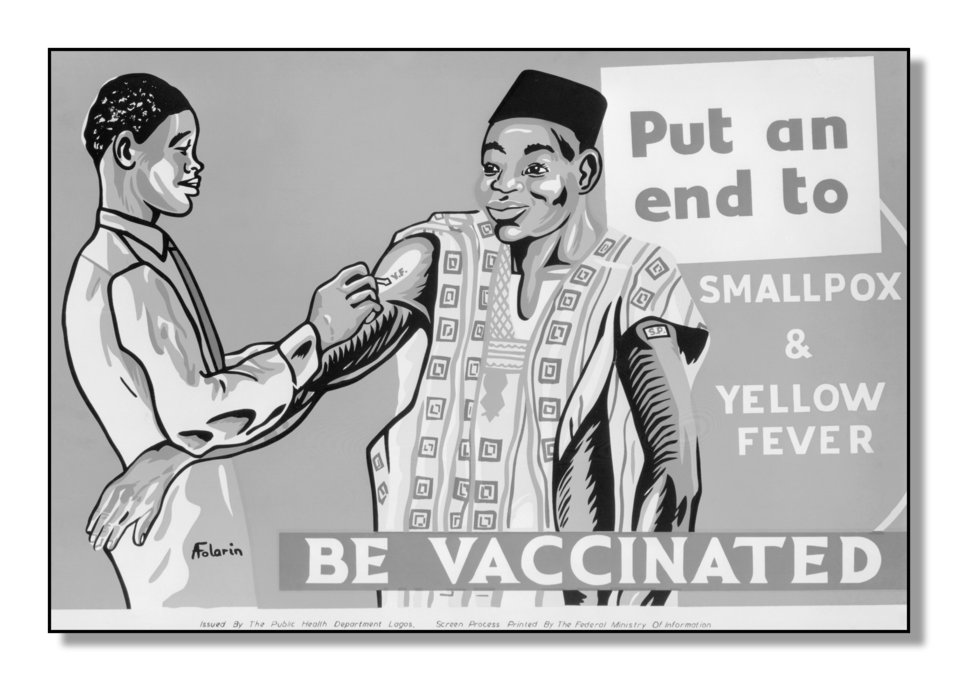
This was an early pre-1979 poster from Lagos, Nigeria promoting vaccination for Smallpox and Measles.